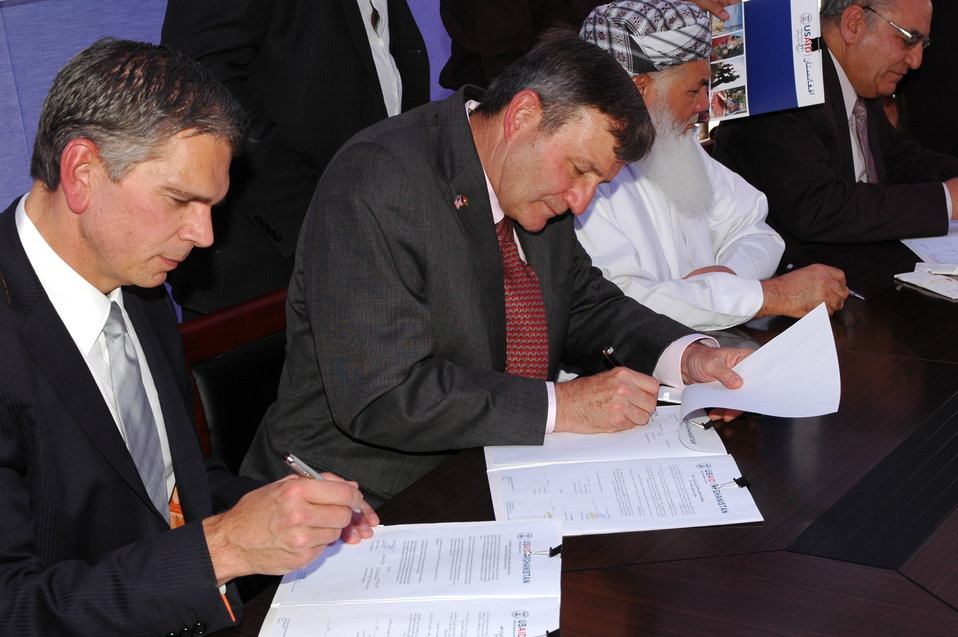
105 MW Tarakhil Power Plant Handover